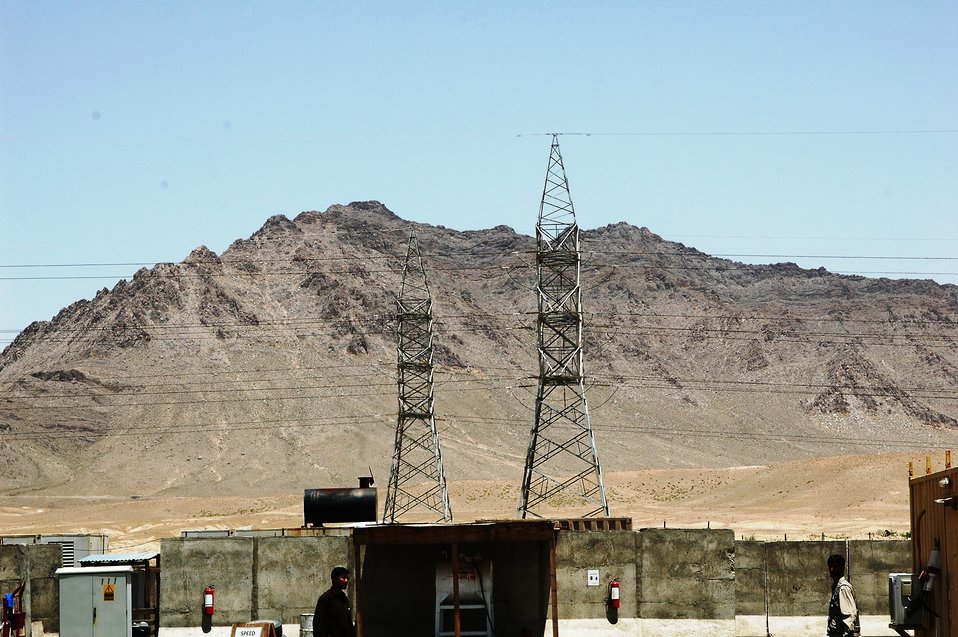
105 MW Tarakhil Power Plant Handover